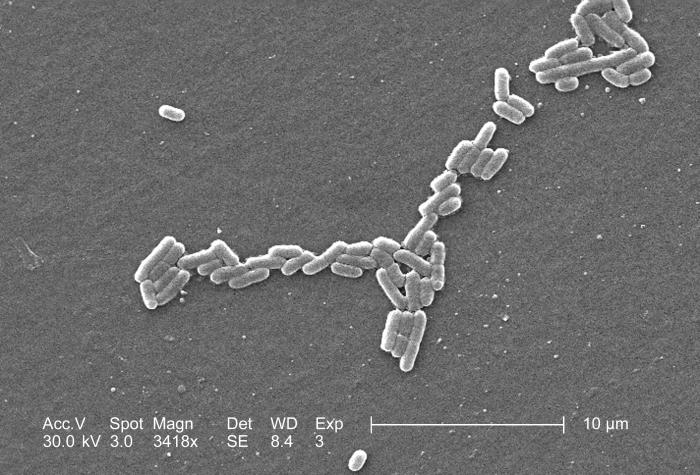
Under a magnification of 3418x, this scanning electron micrograph (SEM) depicted a number of Gram-negative Escherichia coli bacteria of the strain O157:H7, which is one of hundreds of strains of this bacterium. Although most strains are harmless, and live in the intestines of healthy humans and animals, this strain produces a powerful toxin, which can cause severe illness.E. coli O157:H7 was first recognized as a cause of illness in 1982 during an outbreak of severe bloody diarrhea; the outbreak was traced to contaminated hamburgers. Since then, most infections have come from eating undercooked ground beef.The combination of letters and numbers in the name of the bacterium refers to the specific markers found on its surface, which distinguishes it from other types of E. coli.